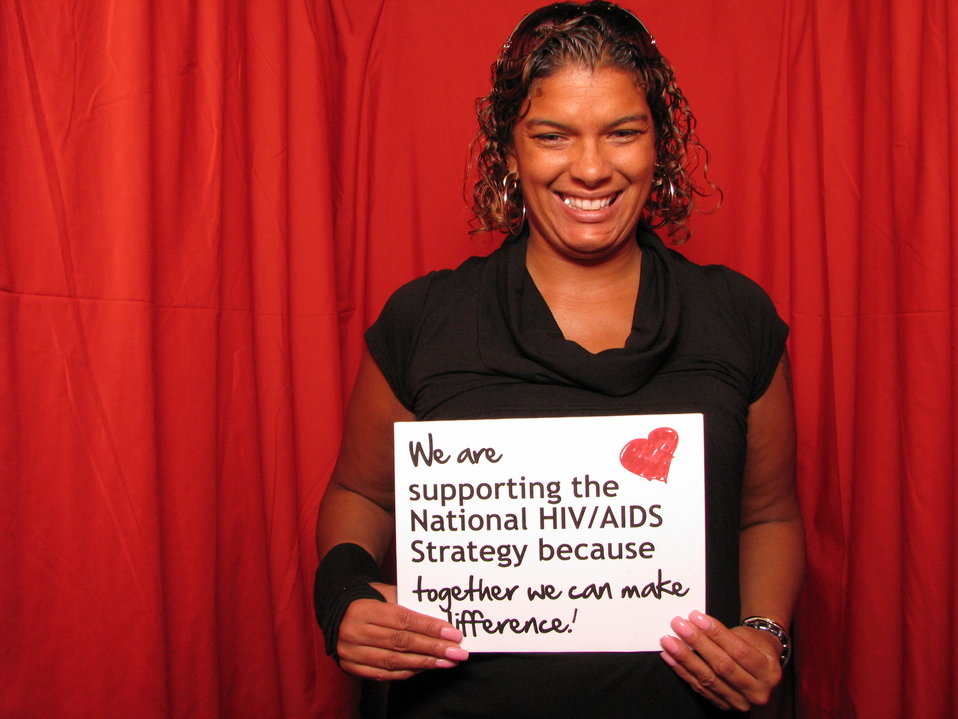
We are supporting the National HIV/AIDS Strategy because together we can make a difference.

From the AIDS.gov photo booth at the U.S. Conference on AIDS, September 2010 (Orlando, FL).